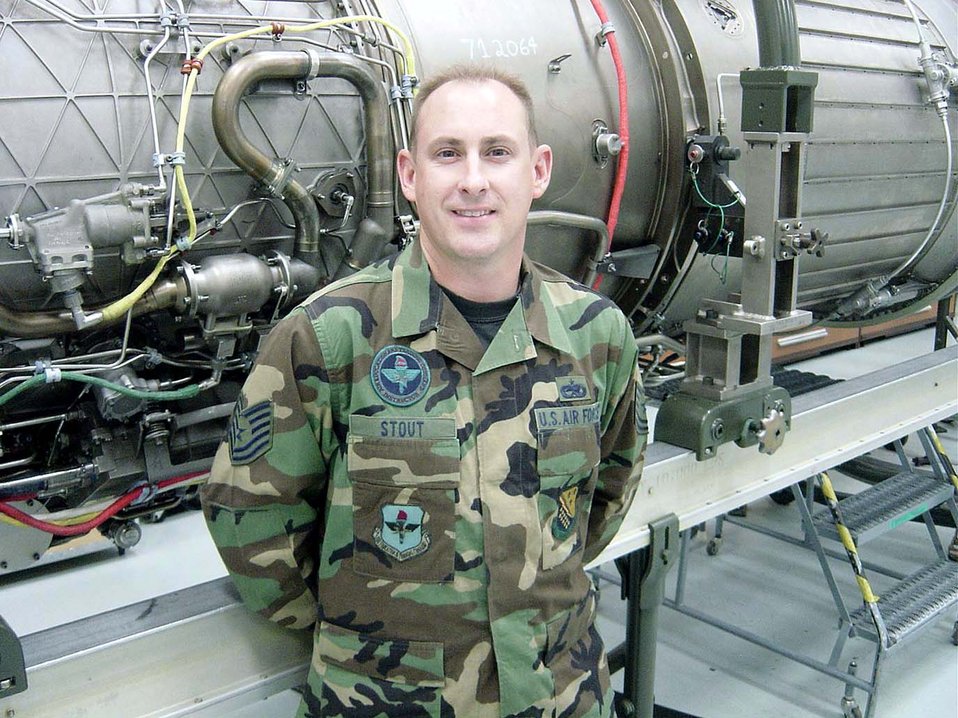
Crew chief follows, sets examples

LUKE AIR FORCE BASE, Ariz. -- Tech. Sgt. Scott Stout joined the Air Force to gain the professionalism he saw in his father and said today he wants to share his dedication to service with everyone he meets. He is an F-15 Eagle maintenance trainer here.